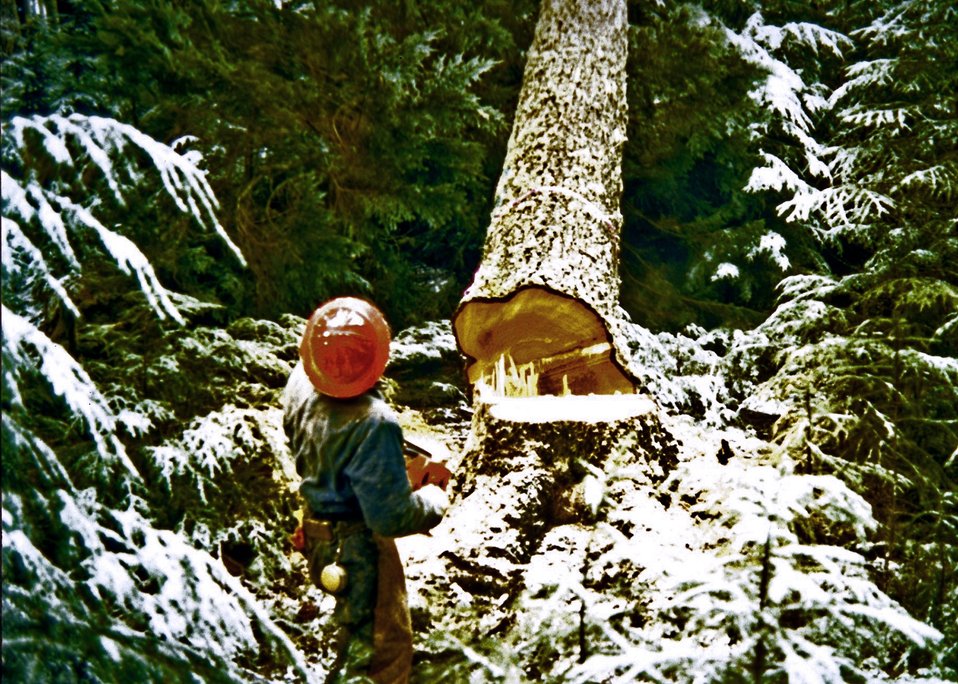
3-P Fallers at Buyer's Deadhorse Timber Sale.